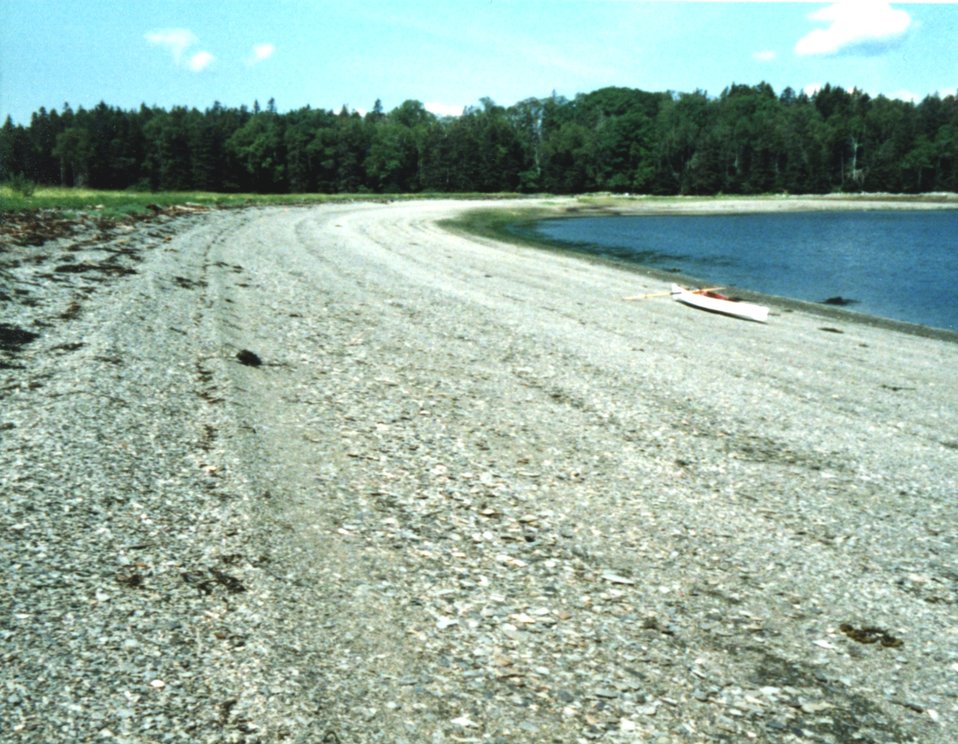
Philbrook Cove on 700 Acre Island.